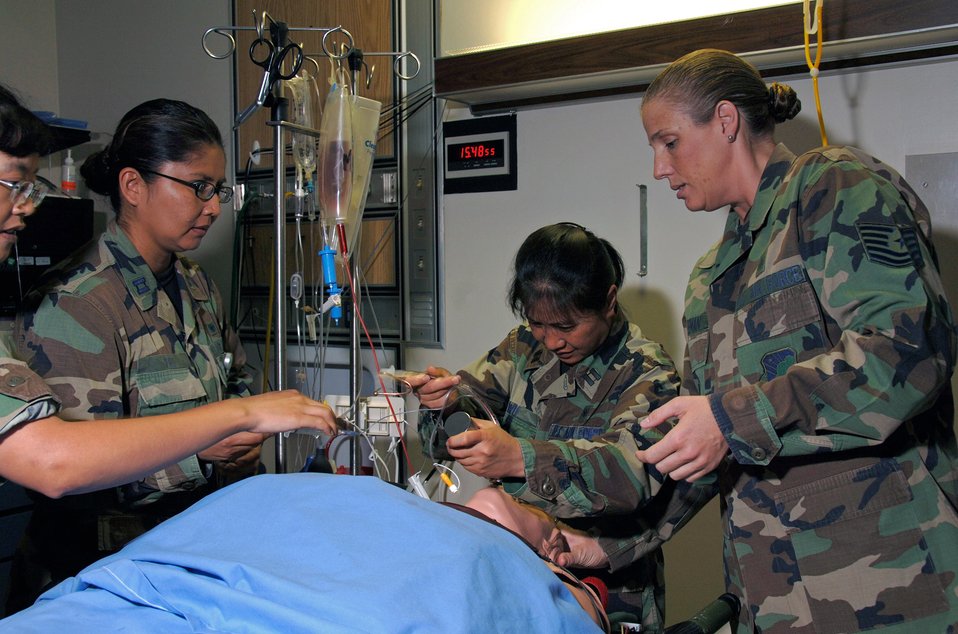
Course focuses on trauma training for nurses, medics

Capt. Yun Wu (center) practices patient intubation on a simulation mannequin Aug. 13, assisted by Tech. Sgt. Tammy Freeman and Capt. Lenora Tso during a trauma and pre-deployment training course at Wilford Hall Medical Center at Lackland Air Force Base, Texas. Medical technicians and nurses participated in the trauma and pre-deployment course in preparation for deployments to Iraqi and Afghanistan. Captains Wu and Tso are clinical nurses and Sergeant Freeman is a medical technician. They are assigned to the 59th Medical Wing.